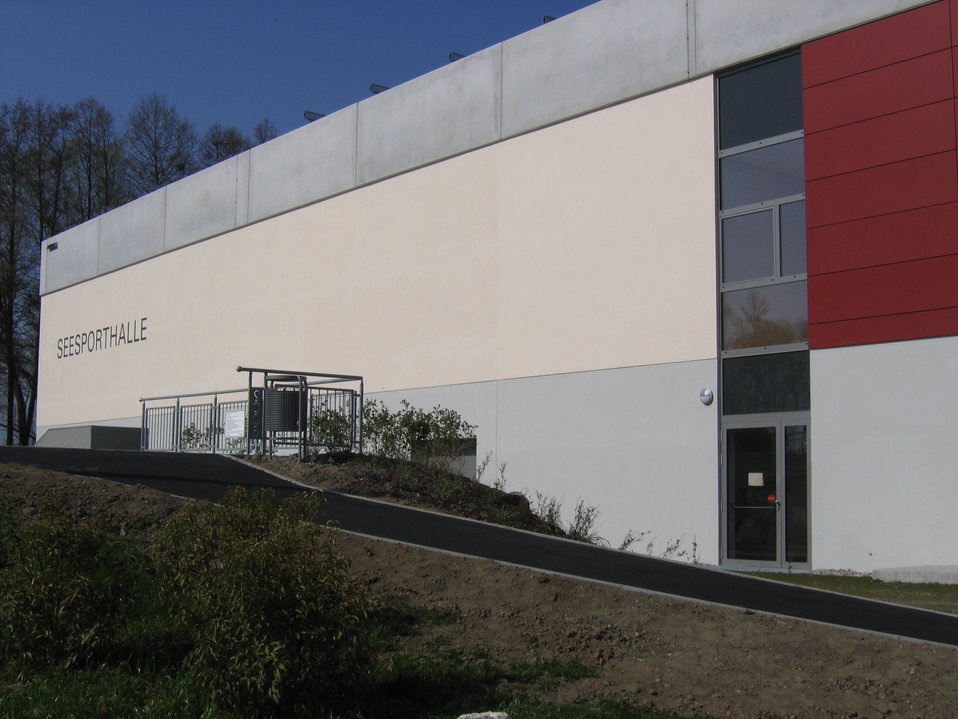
Deutsch: Kressbronn, Seesporthalle